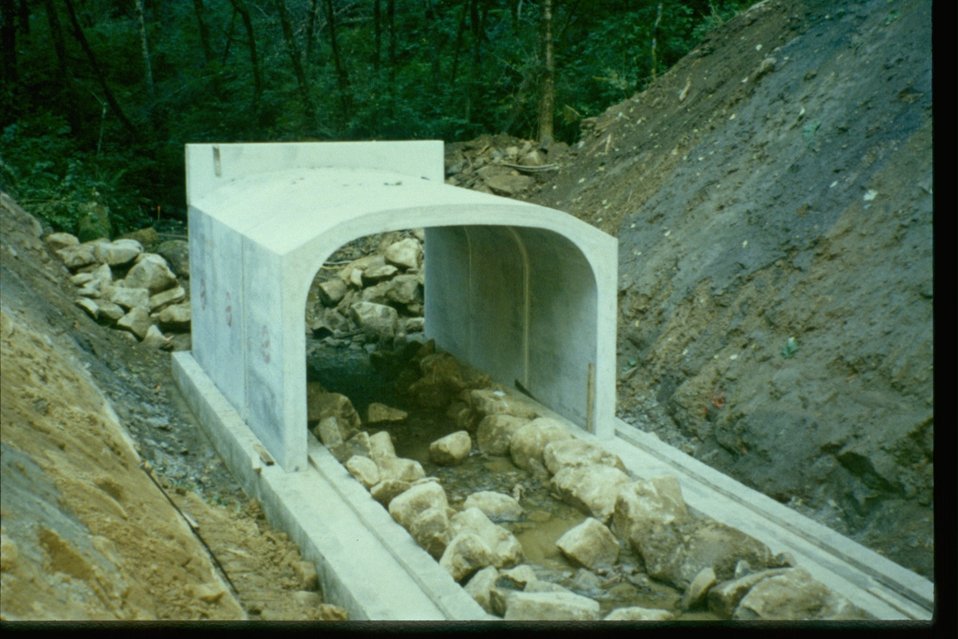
Cole Creek culvert replacement for fish passage.